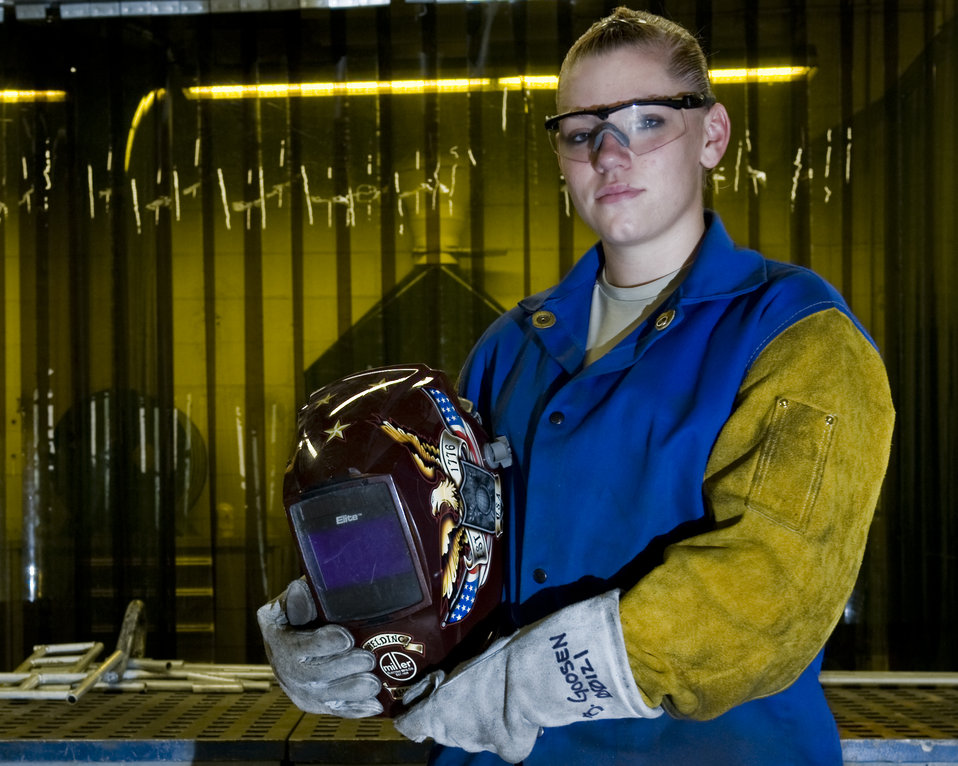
Heavy Metal Airman

Airman 1st Class Brooke Goose poses for a photo Aug. 24, 2012, at Dyess Air Force Base, Texas. Goosen is with the 7thEquipment Maintenance Squadron and the only female out of 28 Airmen in the Dyess metal shop. She has more than seven years experience with welding. ,